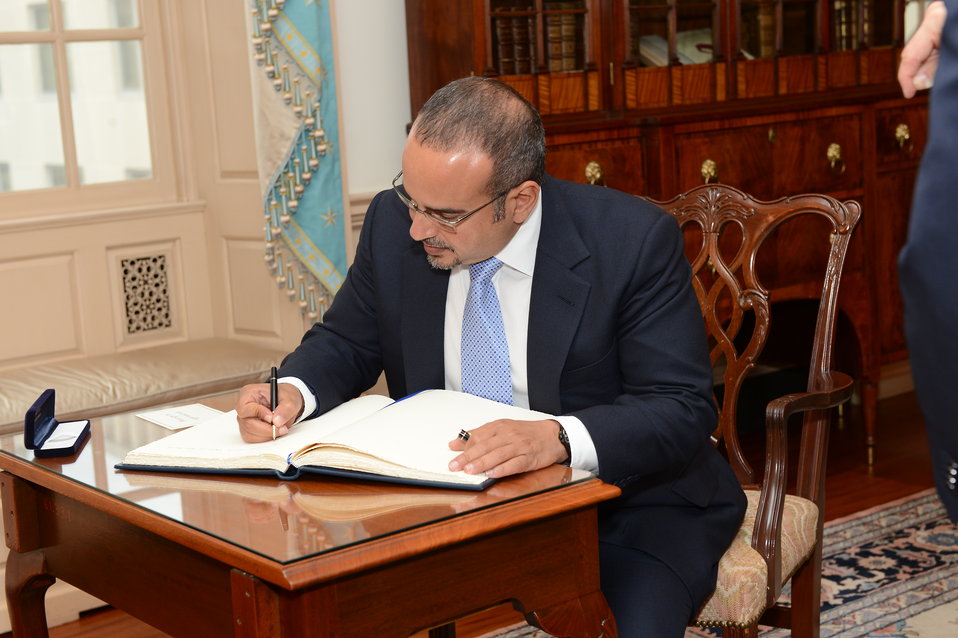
Bahraini Crown Prince Salman bin Hamad Al-Khalifa signs the guestbook before meeting with U.S. Secretary of State John Kerry at the U.S. Department of State in Washington, D.C., on June 6, 2013.